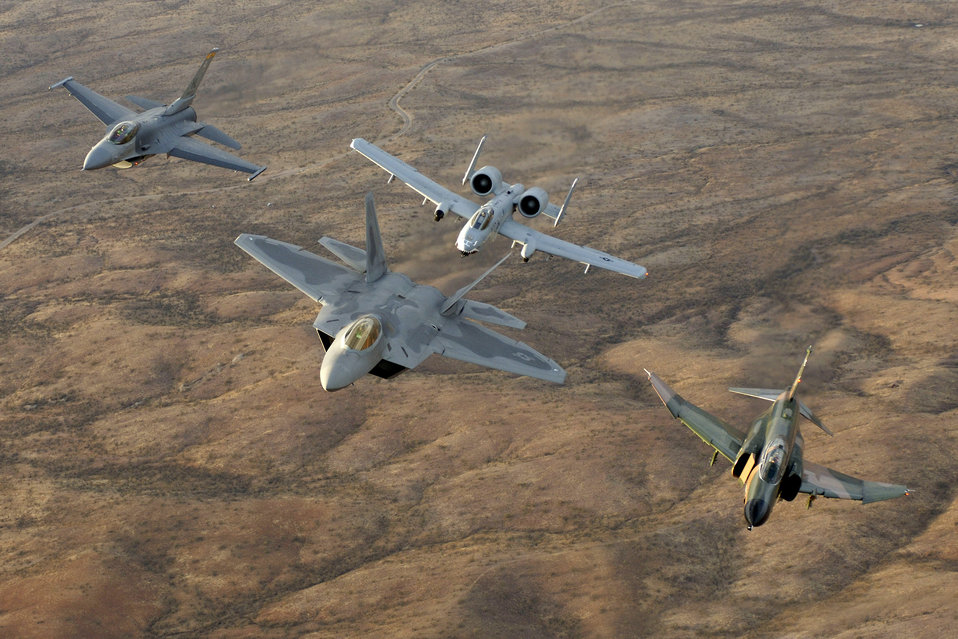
Heritage flight

An F-22A Raptor from Langley Air Force Base, Va., an F-4 Phantom from Holloman Air Force Base, N.M., an F-16 Fighting Falcon and an A-10 Thunderbolt II fly in diamond formation over Tucson, Ariz., Sunday, March 5, 2006, during the Air Combat Command Heritage Conference at Davis-Monthan Air Force Base.